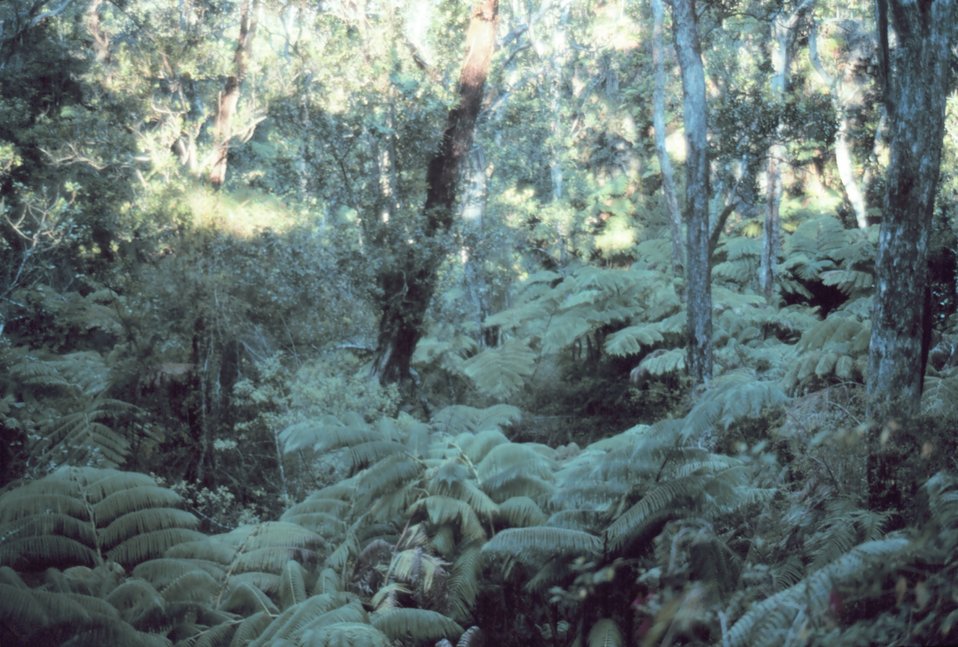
A nature trail near Thurston Lava Tube